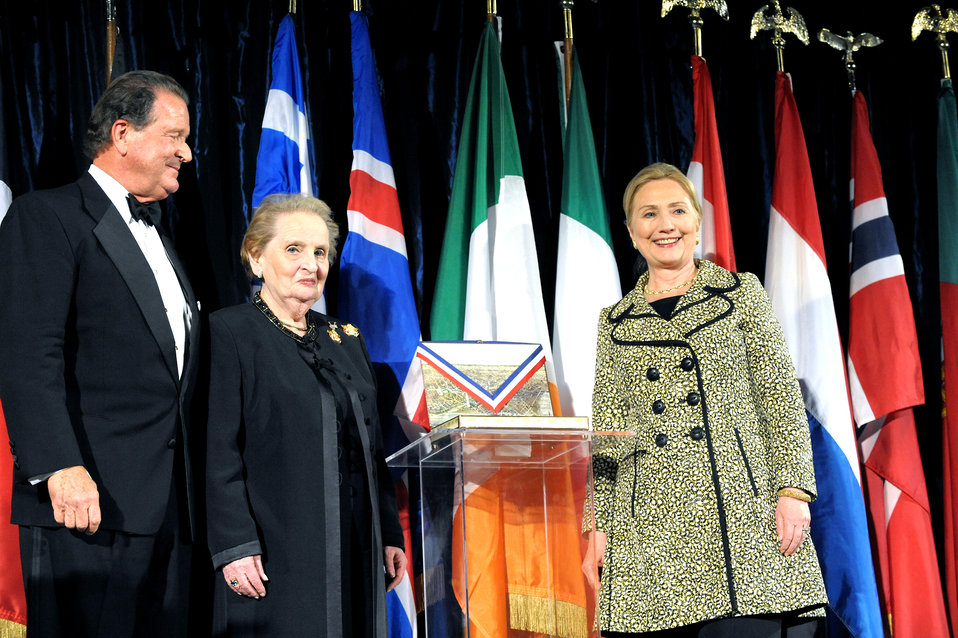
Secretary Clinton Receives the 2011 George C. Marshall Foundation Award

U.S. Secretary of State Hillary Rodham Clinton receives the 2011 George C. Marshall Foundation Award at the National Building Museum in Washington, D.C., on June 2, 2011.